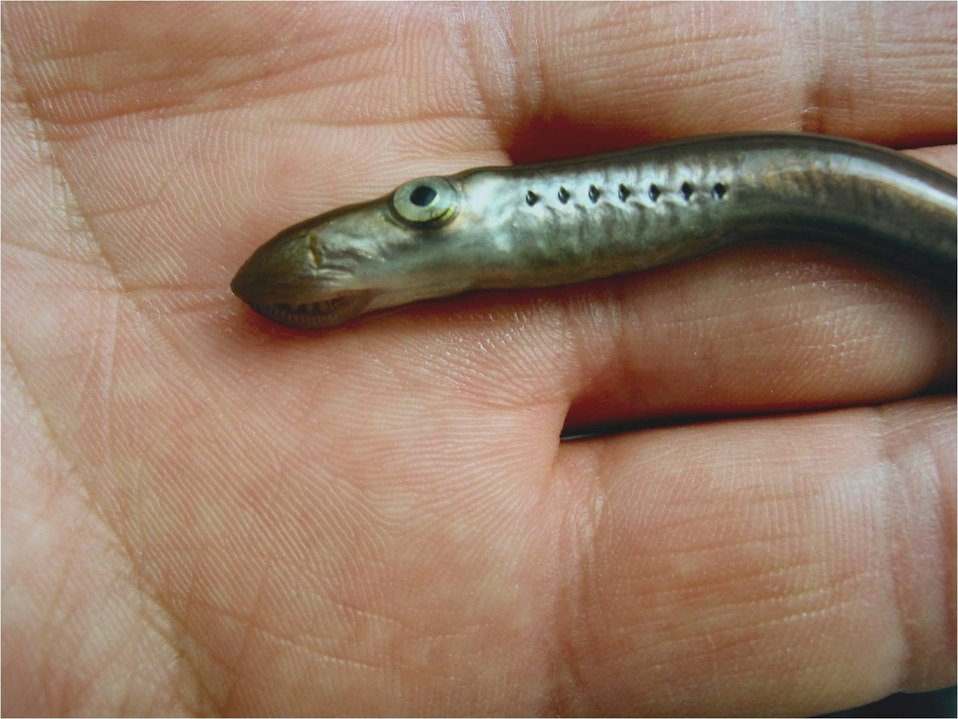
Lamprey juvenile - macropthalmia

Larvae transform to juveniles (macropthalmia), shown in this picture, and migrate to the ocean.